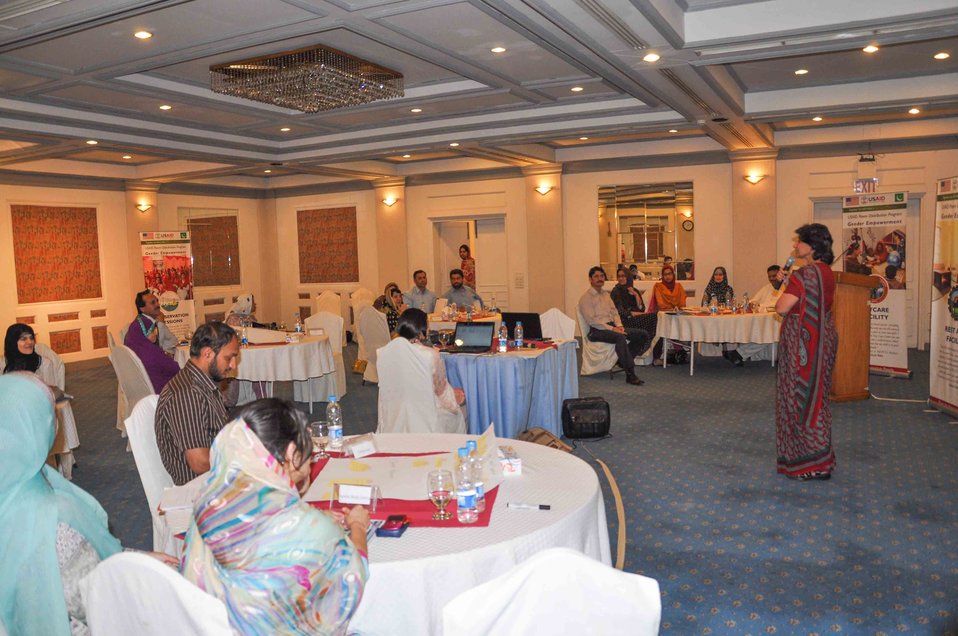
USAID helps reshaping the environment for women at DISCOs

A glimpse from the training session.